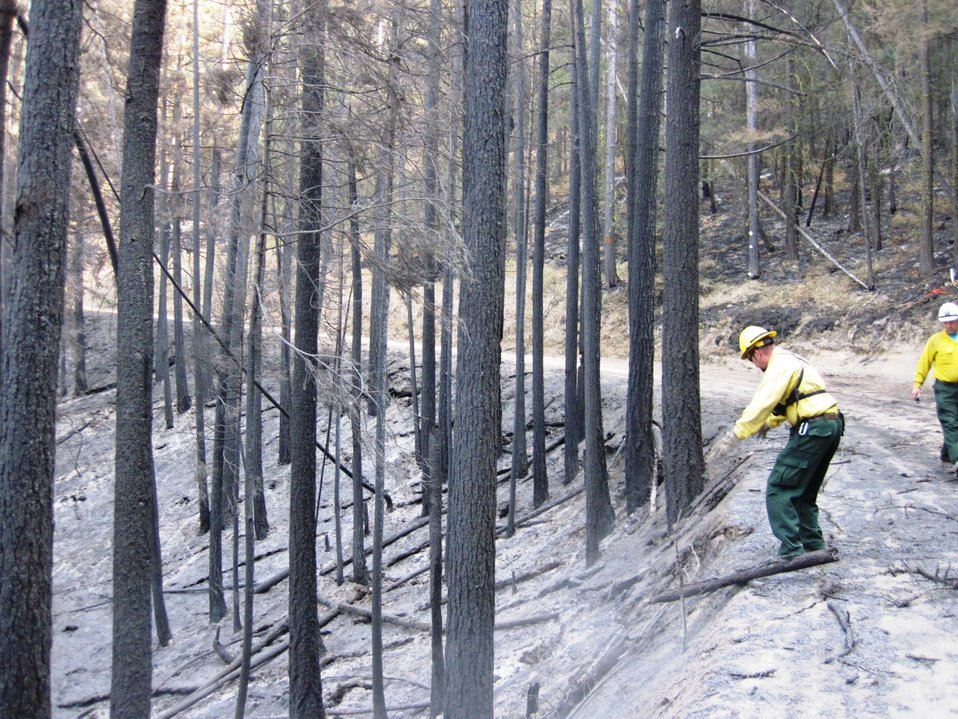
Burned Area Emergency Response (BAER) team surveys burn area at the site of the Central Washington Fire in the Wenatchee National Forest in Washington. BAER is a rapid assessment of burned watersheds by a BAER team to identify imminent post-wildfire threats to human life and safety property and critical natural or cultural resources on National Forest System lands and take immediate actions to implement emergency stabilization measures before the first major storms. Fires result in loss of vegetation exposure of soil to erosion and increased water runoff that may lead to flooding increased sediment debris flows and damage to critical natural and cultural resources. BAER team members implement seeding and mulching installation to prevent erosion, erect temporary water run-off control structures that will protect recovering areas, and installation of warning signs, replace safety related facilities, remove safety hazards, prevent permanent loss of habitat for threatened and endangered species, and prevent the spread of noxious weeds and protect critical cultural resources.